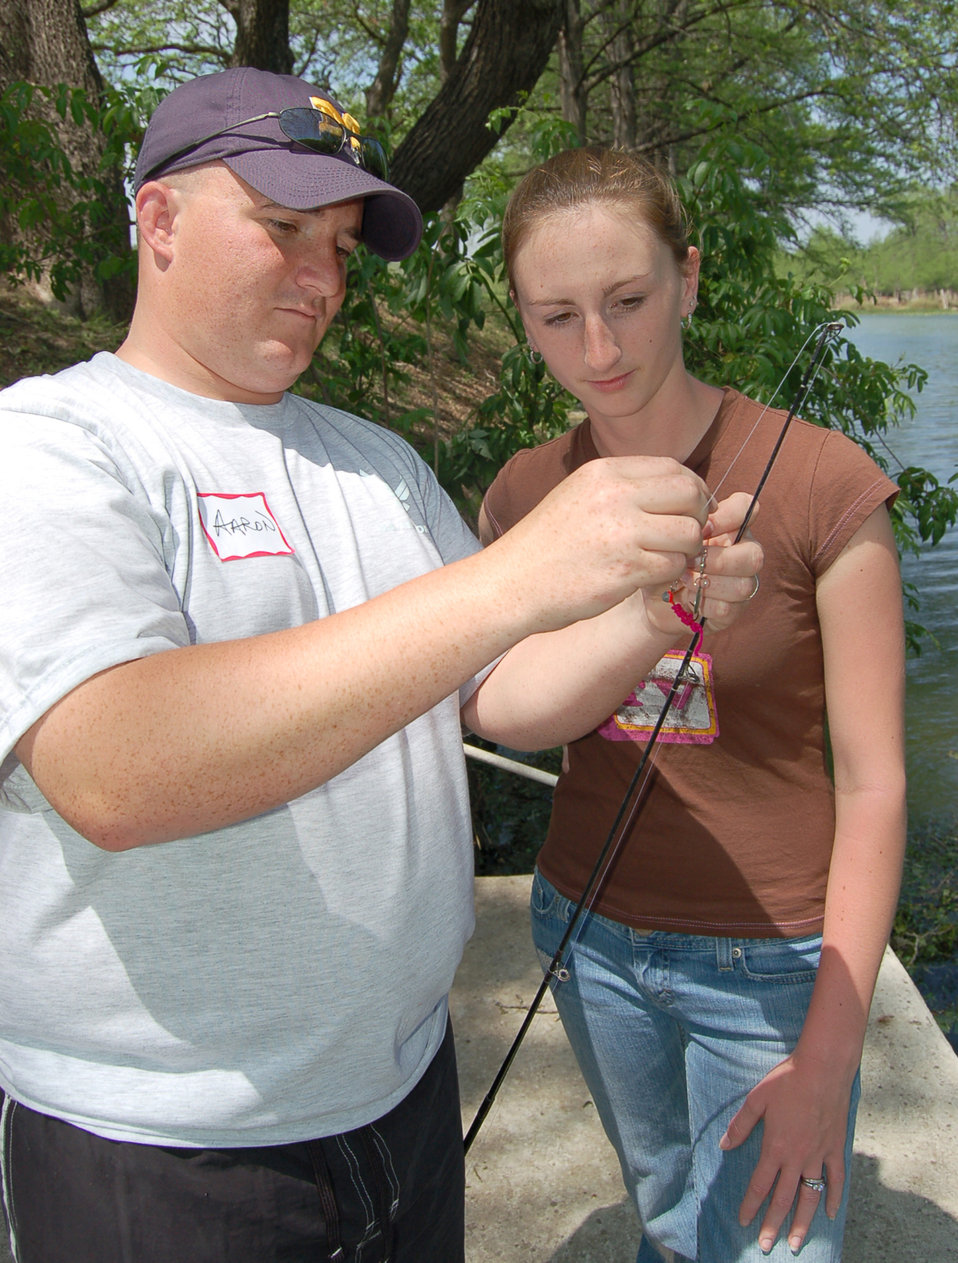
Retreat reconnects couples

Senior Airman Aaron Childs helps his wife, Mellissa, rig a lure to her fishing line on a bank of the Guadalupe River at Hunt, Texas, on Saturday, April 22, 2006. Fishing was one of the activities at a retreat hosted by the Military, Veteran and Family Assistance Foundation at the Heart of the Hills Camp April 20 to 27. The retreat helps couples reconnect after the military spouse returns from a deployment.